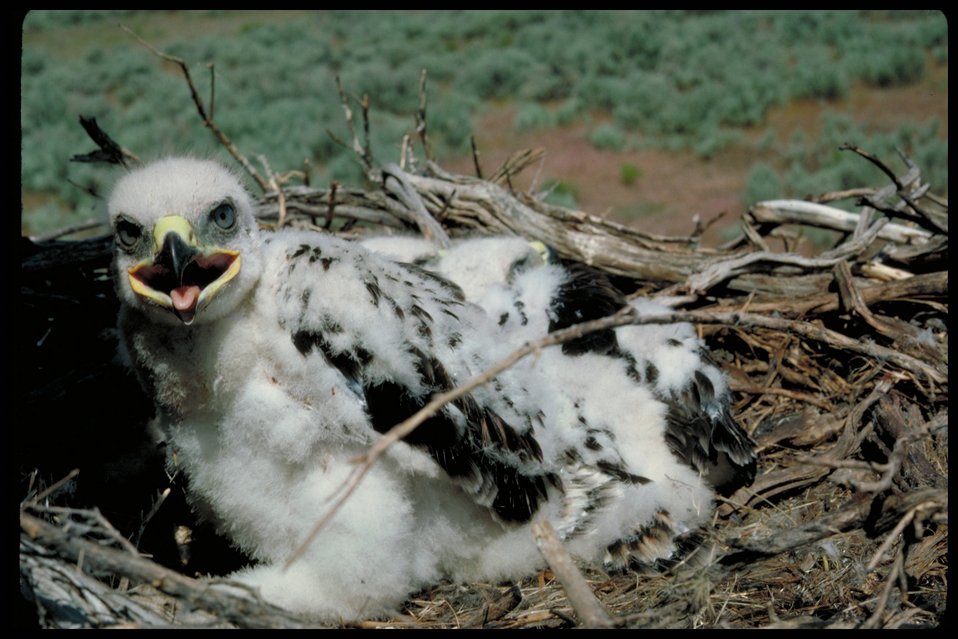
Chicks Birds of Prey National Conservation Area BOP Owyhee Field Office LSRD Lower Snake River District